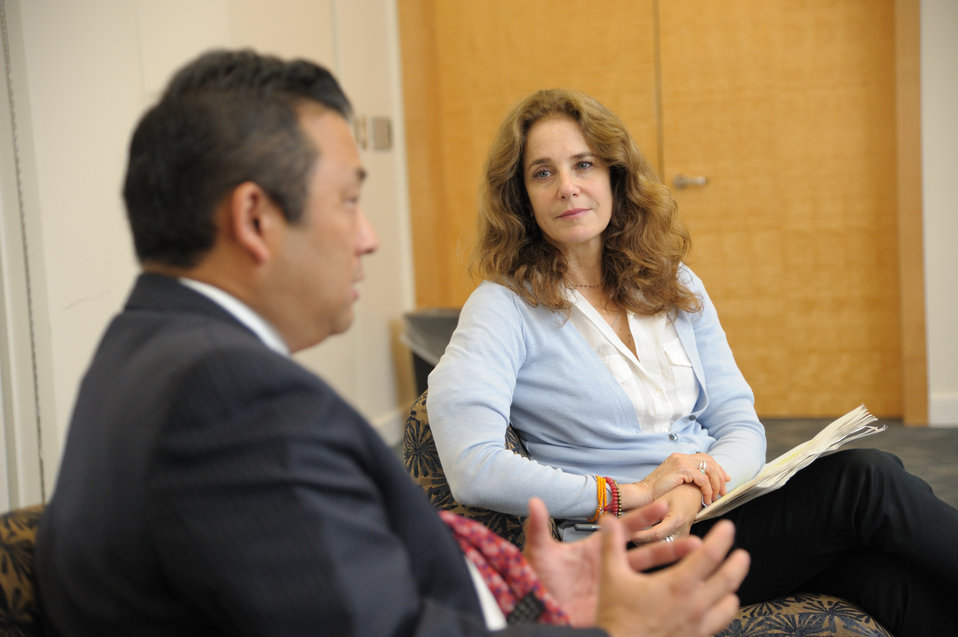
Winger and Mineta

Debra Winger and David Mineta (Deputy Director of Demand Reduction, White House Office of National Drug Control Policy) speak prior to NIDA’s Addiction Performance Project, held Aug 5, 2011 on the NIH Campus